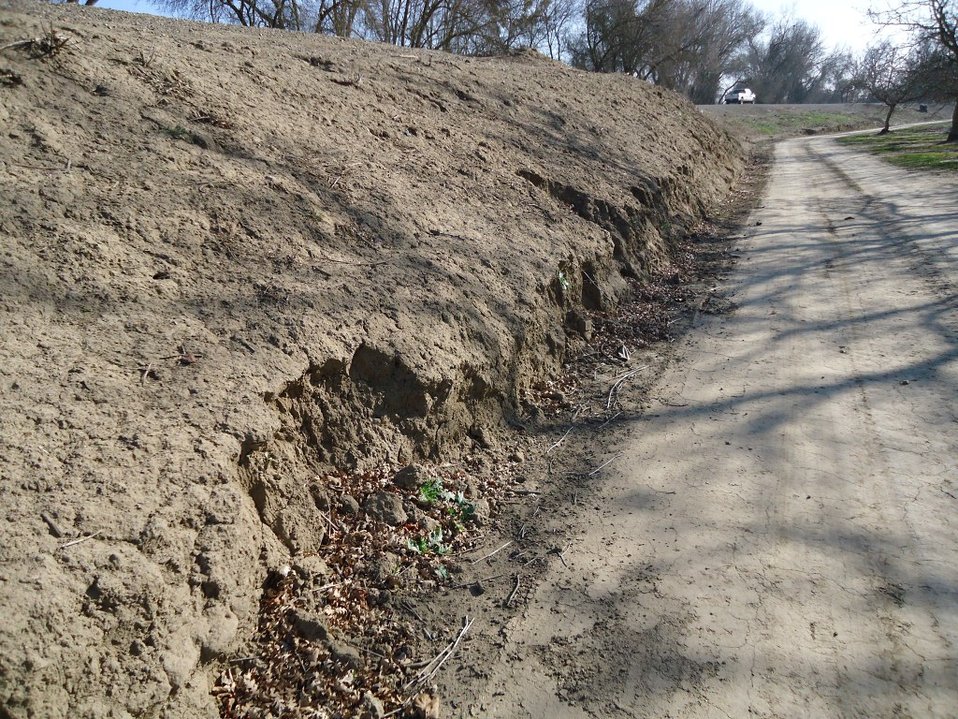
Encroachment on Knights Landing levee

A road encroaches on the toe of a levee in the Knights Landing, Calif., area, shown during a levee inspection in 2012. The U.S. Army Corps of Engineers inspects levees in its Rehabilitation and Inspection Program to ensure levees don’t pose an unacceptable risk to lives and to provide levee managers and residents with detailed information on the condition of levees to help them make informed decisions about safety.